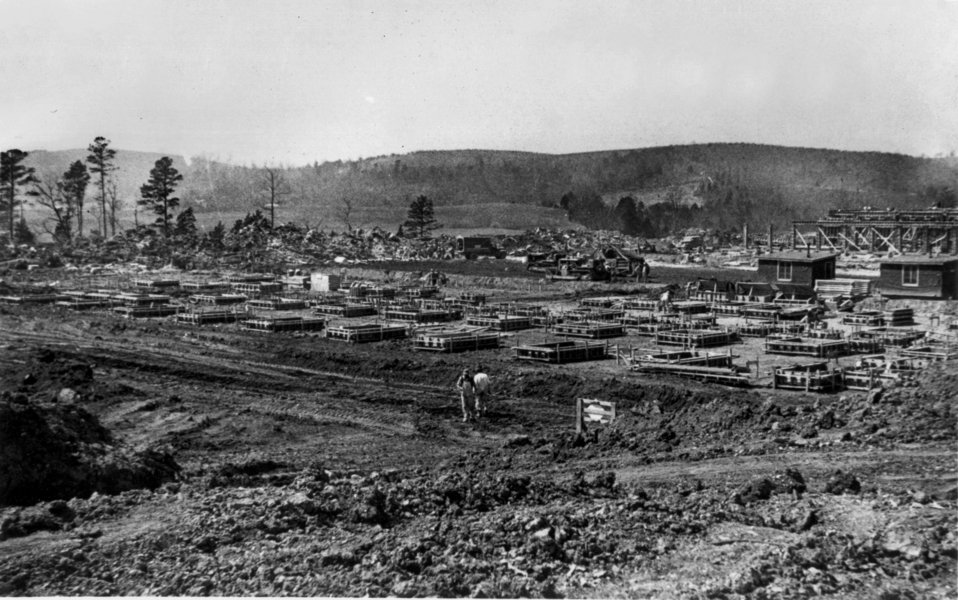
K-25 footings Oak Ridge

221-16 DOE photo by Ed Westcott 4-6-1944 Oak Ridge, Tennessee